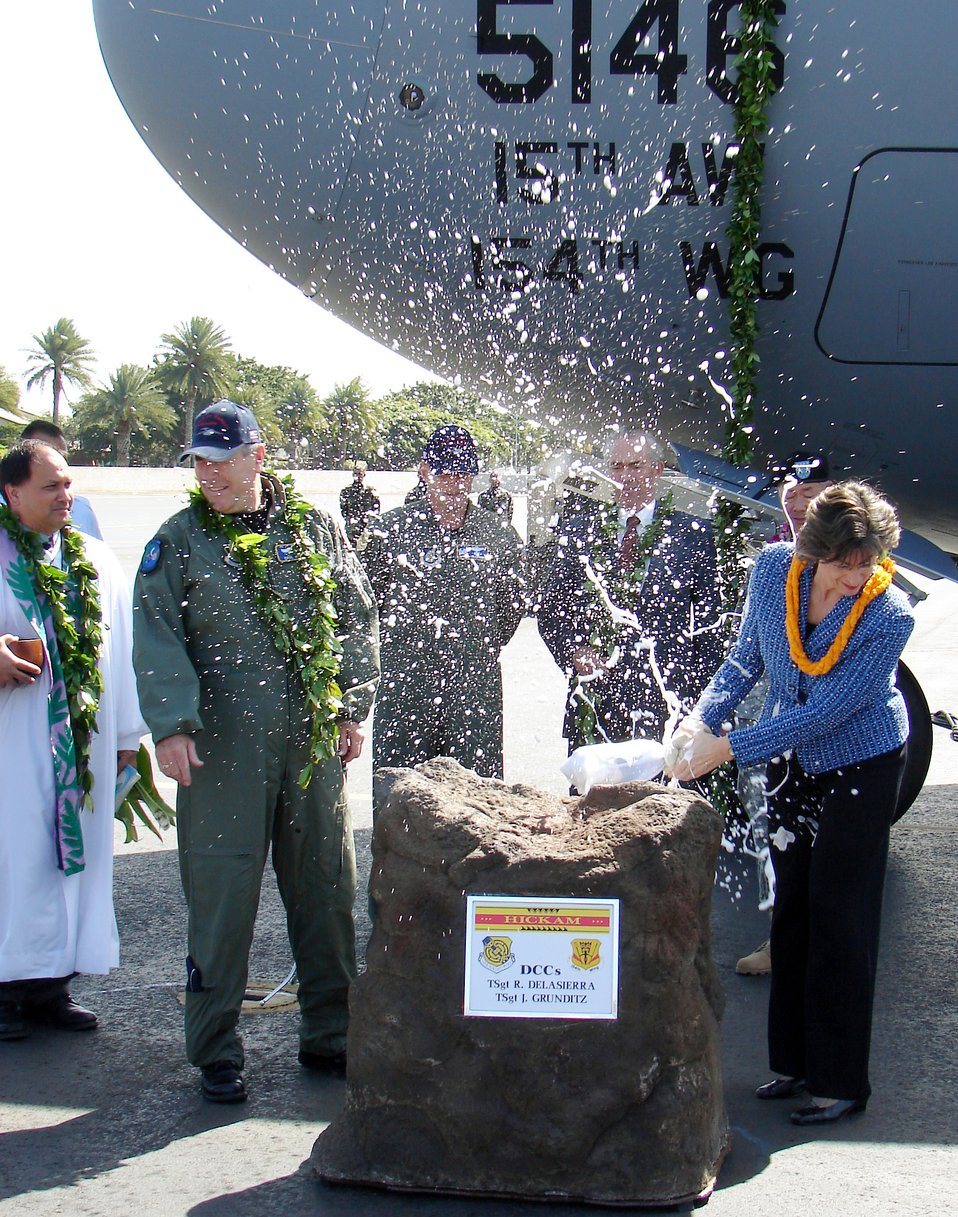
C-17 ceremony

HICKAM AIR FORCE BASE, Hawaii (AFPN) -- Gen. Paul V. Hester, commander, Pacific Air Forces, and the Hawaiian Gov. Linda Lingle christen PACAF's first C-17, the